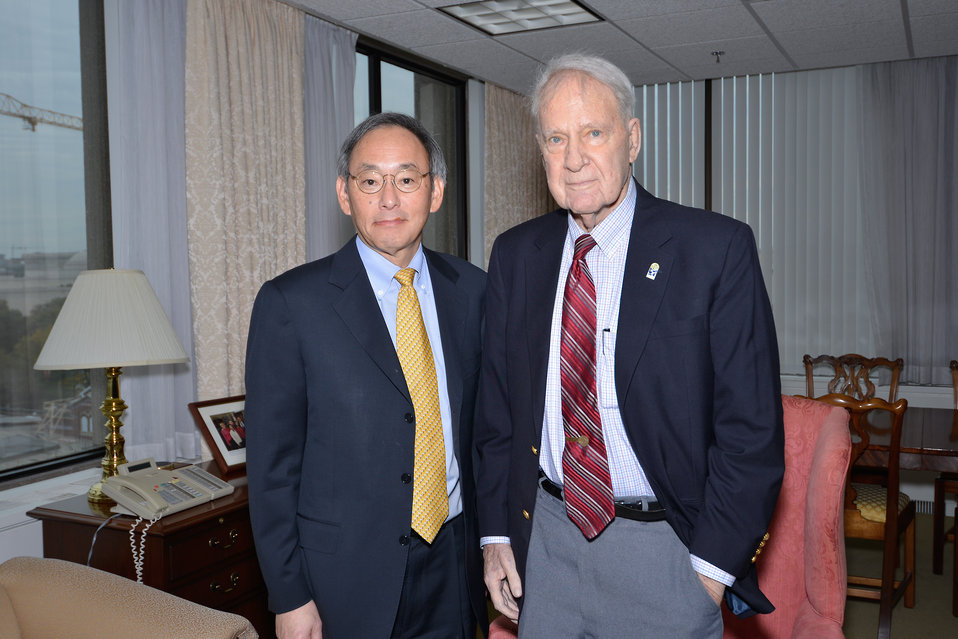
Secretary Chu and Secretary Schlesinger

Secretary Steven Chu chats with Secretary James Schlesinger, first Secretary of Energy, before the 35th Anniversary and Secretarial Honors Awards, held on October 4, 2012.